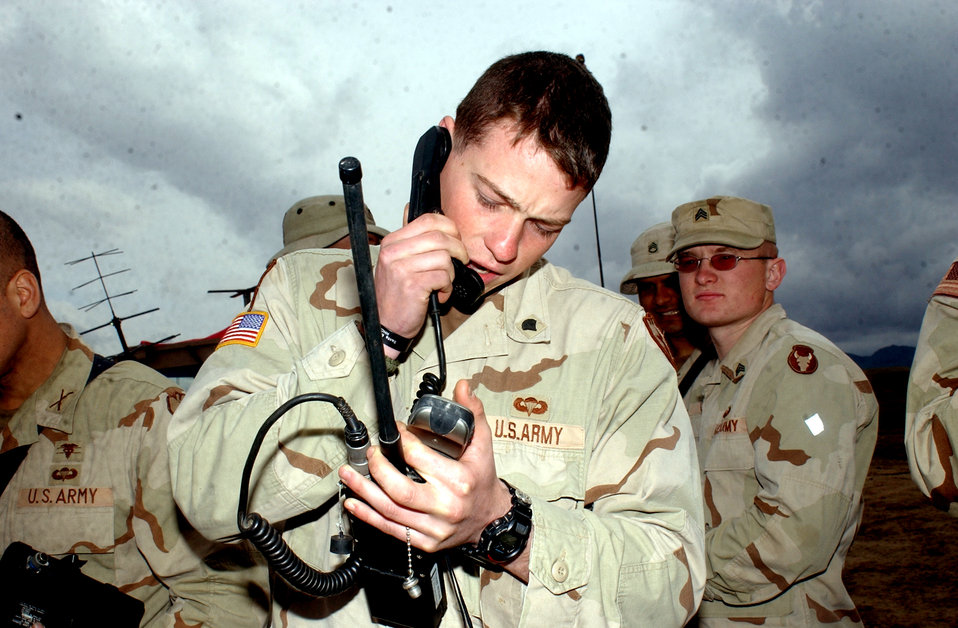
Airman teaches Soldiers to call for CAS

FORWARD OPERATING BASE RIPLEY, Afghanistan -- Army Spc. James Mayer, a forward observer for the 5th Infantry Regiment consults his GPS locator as he recites his position to pilots during emergency close-air-support training.